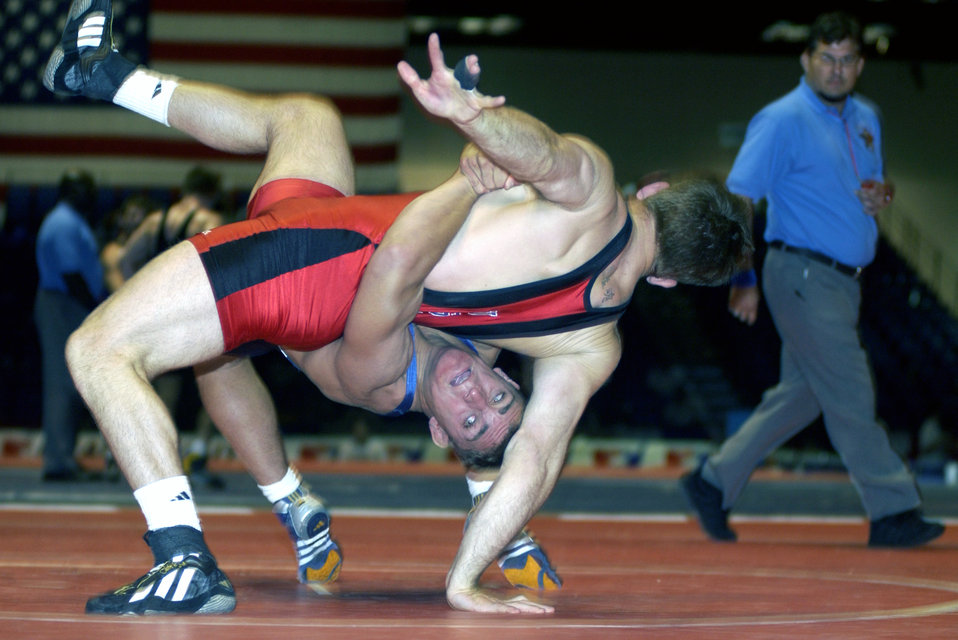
Twister, anyone?

INDIANAPOLIS, Ind. -- Senior Airman Arron Sieracki performs a lift and toss on Tom Ciezki, Wildcat wrestling club. Sieracki had a dominating 9-1 win in the 84 kg/185 lbs. Greco-Roman weight class at the 2003 USA Wrestling World Team Trials held June 20-22. Sieracki is a member of the Air Forces World Class Athlete program at Colorado Springs, Colo.